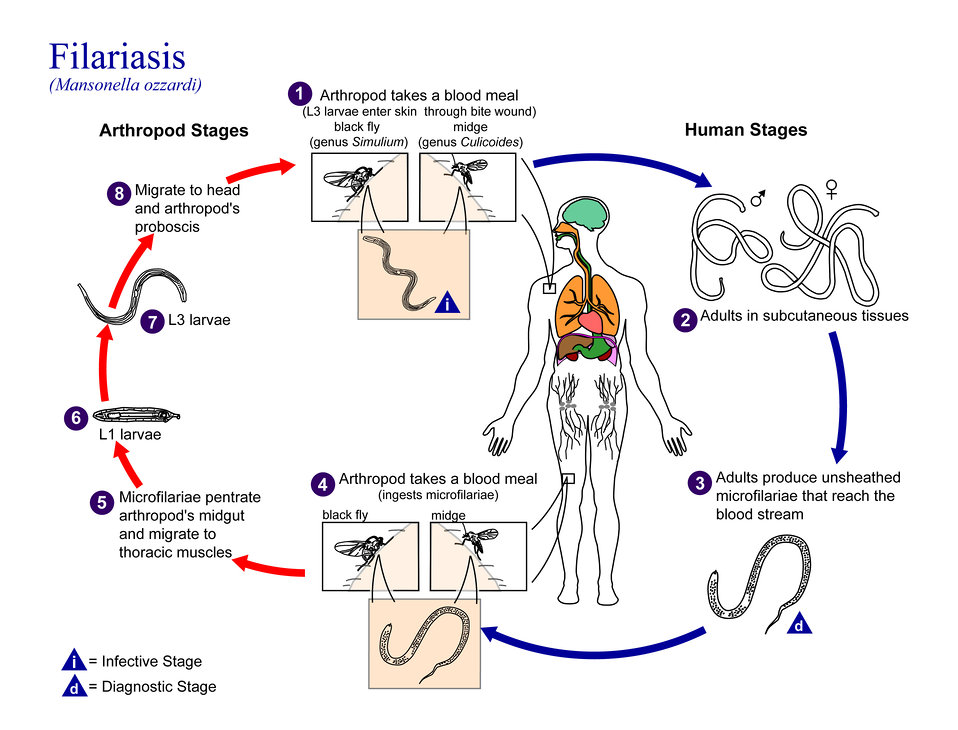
This is an illustration of the life cycle of Mansonella ozzardi, one of the causal agents of Filariasis.